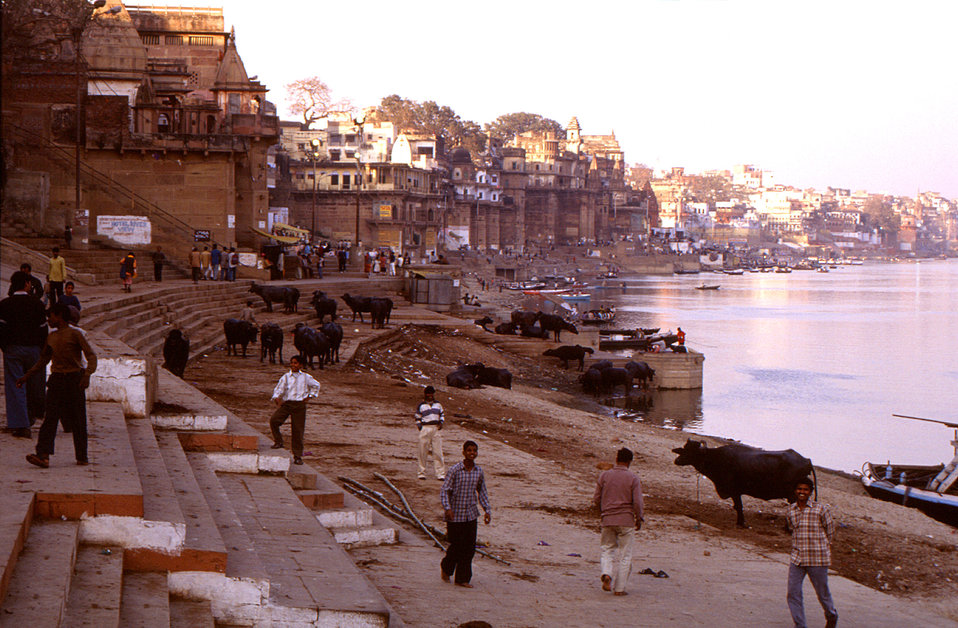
The Indian city of Varanasi is situated on the banks of the sacred Ganges River, and is one of the holiest places in India. On a daily basis, people frequent the steps, or ghats along the Ganges River. This image was captured from one of the riverbank ghats as the river passed through the city, which has been a center of learning and civilization for over 2000 years, and claims to be one of the oldest cities in the world.. It is to the riverbank ghats that pilgrims flock in order to bath in the Ganges River's holy waters. It is believed that through this bathing ritual, one may be absolved from all sins.